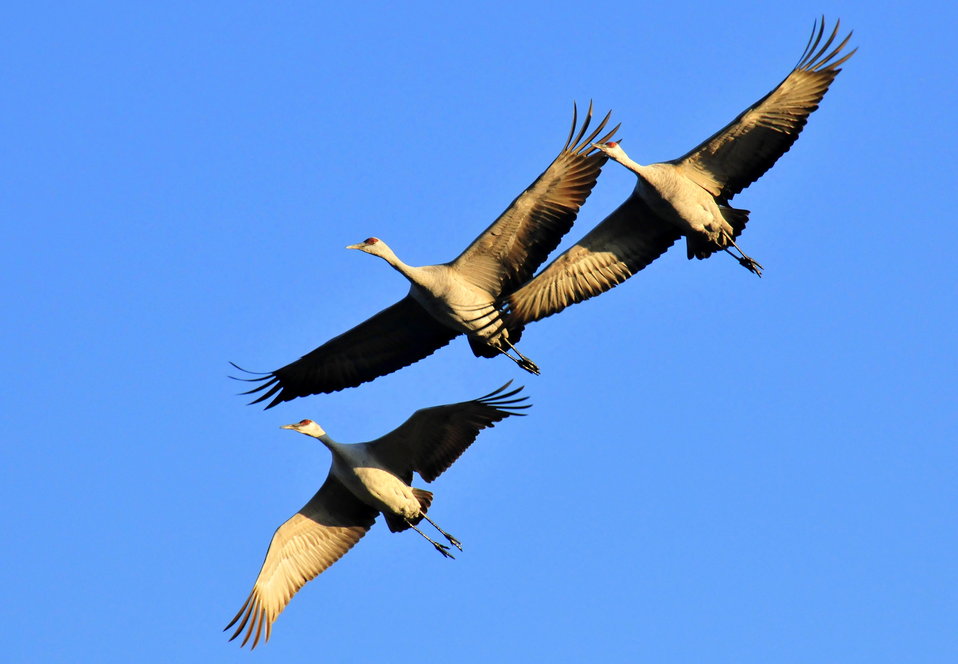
Sandhill cranes 02

Trio of sandhill cranes flying overhead.